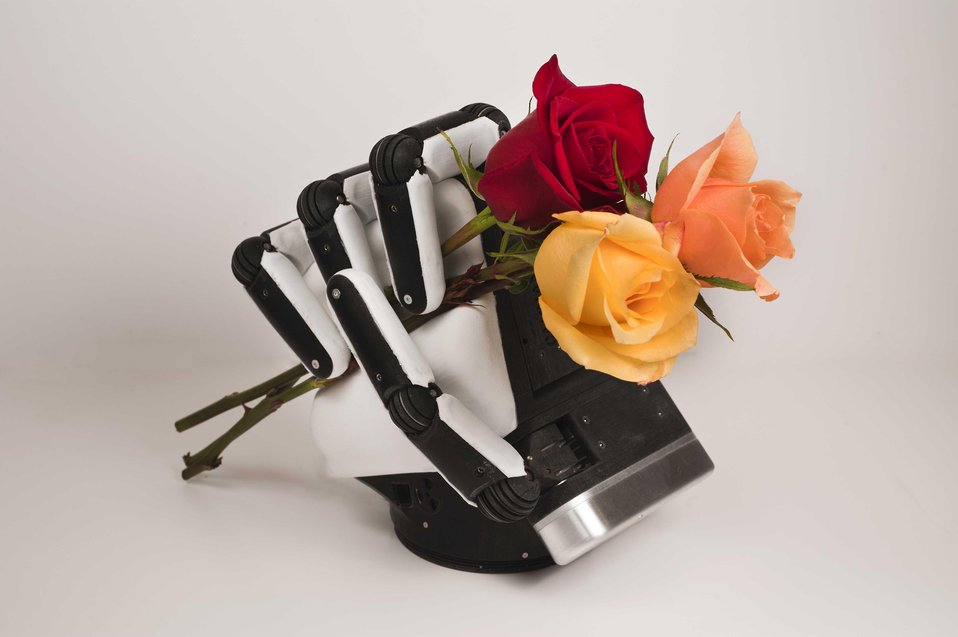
Sandia National Laboratory has developed a cost-effective robotic hand that can be used in disarming Improvised Explosive Devices, or IEDS.

The Sandia Hand addresses challenges that have prevented widespread adoption of other robotics hands including cost, durability dexterity and modularity. The Sandia Hand is funded by the Defense Advanced Research Projects Agency.